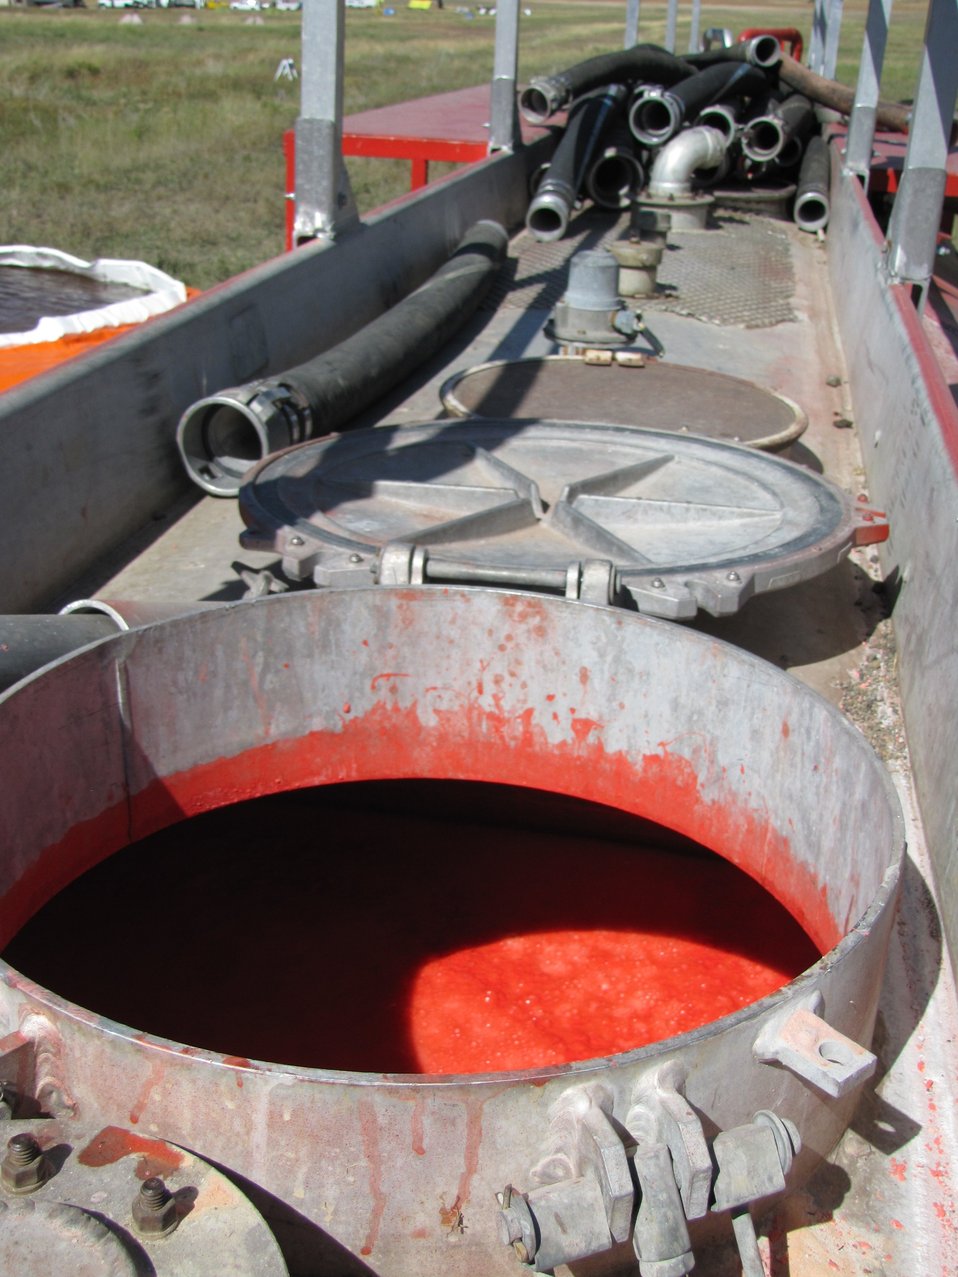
An Up-Close Look at Fire Retardant

An opening in the top of the portable mixing plant allows for a glimpse of the prepared fire retardant that will be stored until needed for helicopter operations.